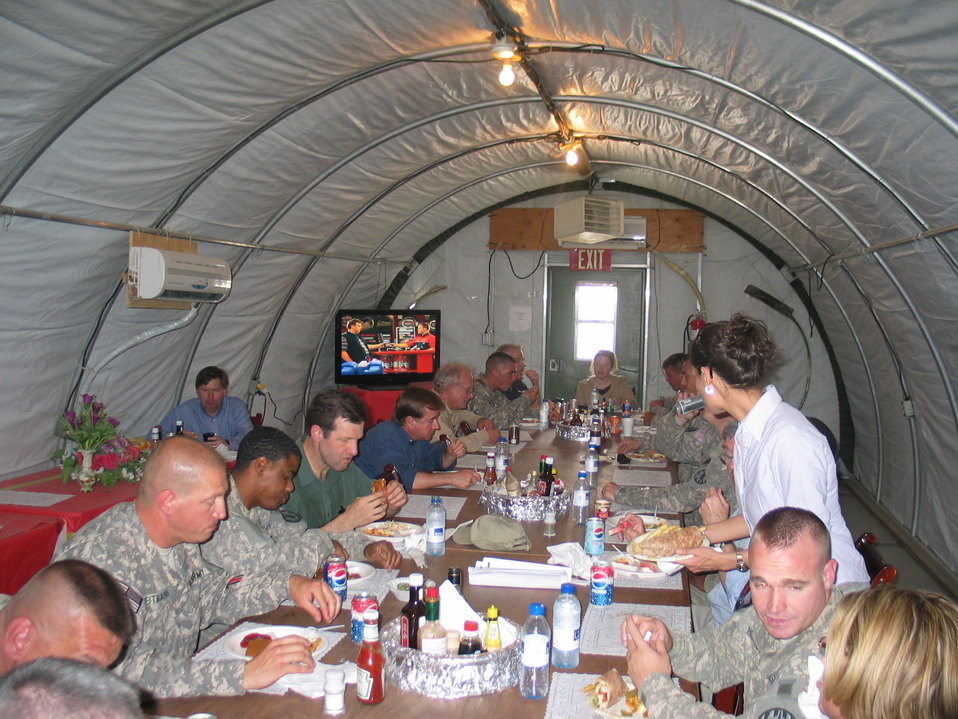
CODEL Berman